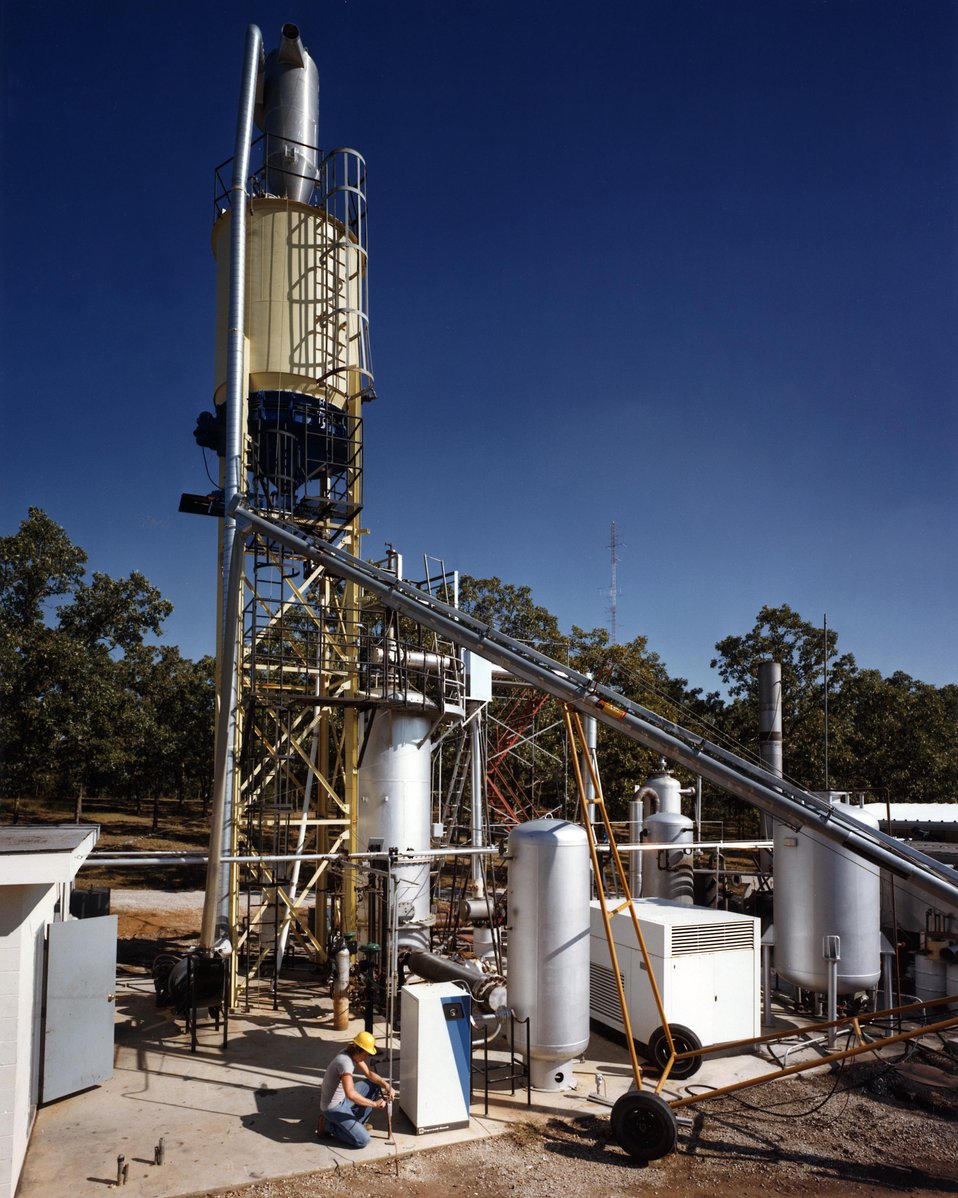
FEEDING, REACTOR, AND ASSOCIATED EQUIPMENT MOUNTED ON THE GASIFIER PAD.

THE WOOD GASIFIER AT THE UNIVERSITY OF MISSOURI IS PART OF THE PROGRAM TO DEVELOP BIOMASS AS A FUEL SOURCE. WOOD CAN BE PROCESSED TO PRODUCE MEDIUM BTU GAS THAT CAN BE USED DIRECTLY OR UPGRADED INTO SUCH FUELS AS SYNTHETIC NATURAL GAS, METHANOL, AMMONIA, AND PETROCHEMICAL SUBSTITUTES. THE MAIN OBJECTIVE OF THIS PROGRAM IS TO IMPROVE CONVERSION EFFICIENCY AND PRODUCTIVITY AND REDUCE PRODUCTION COSTS OF THE GASIFICATION PROCESS.